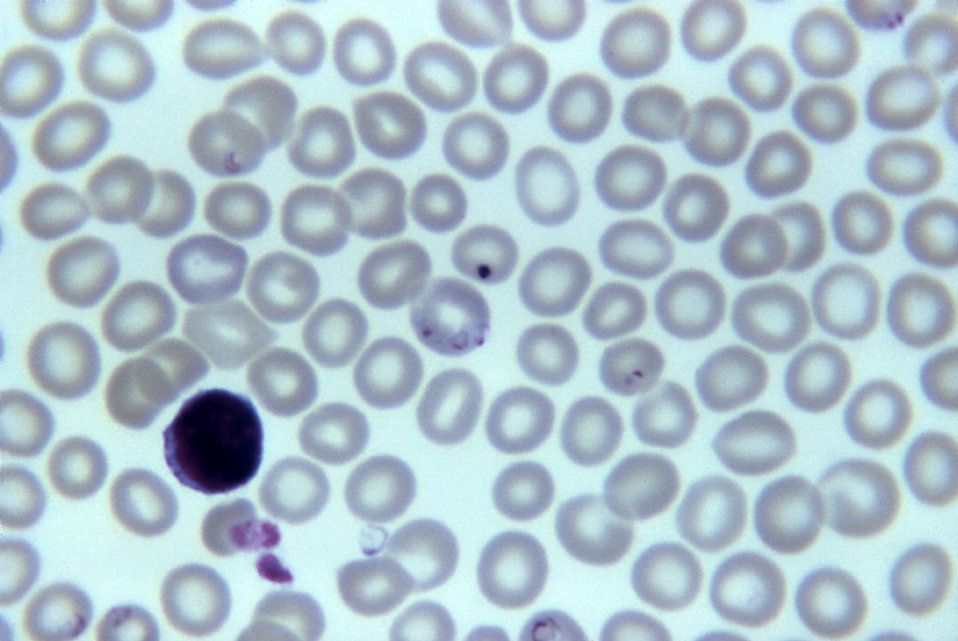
This blood smear micrograph revealed the presence of Babesia sp. ring formations inside the host erythrocytes.